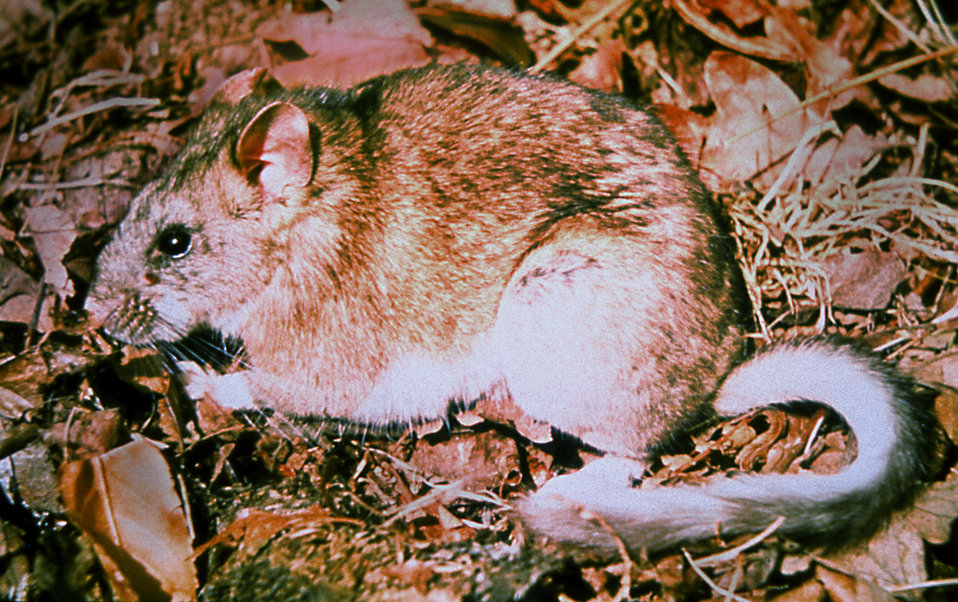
A Bushy-tailed Woodrat, Neotoma cinerea, is known to carry fleas inoculated with the plague bacteria Y. pestis.